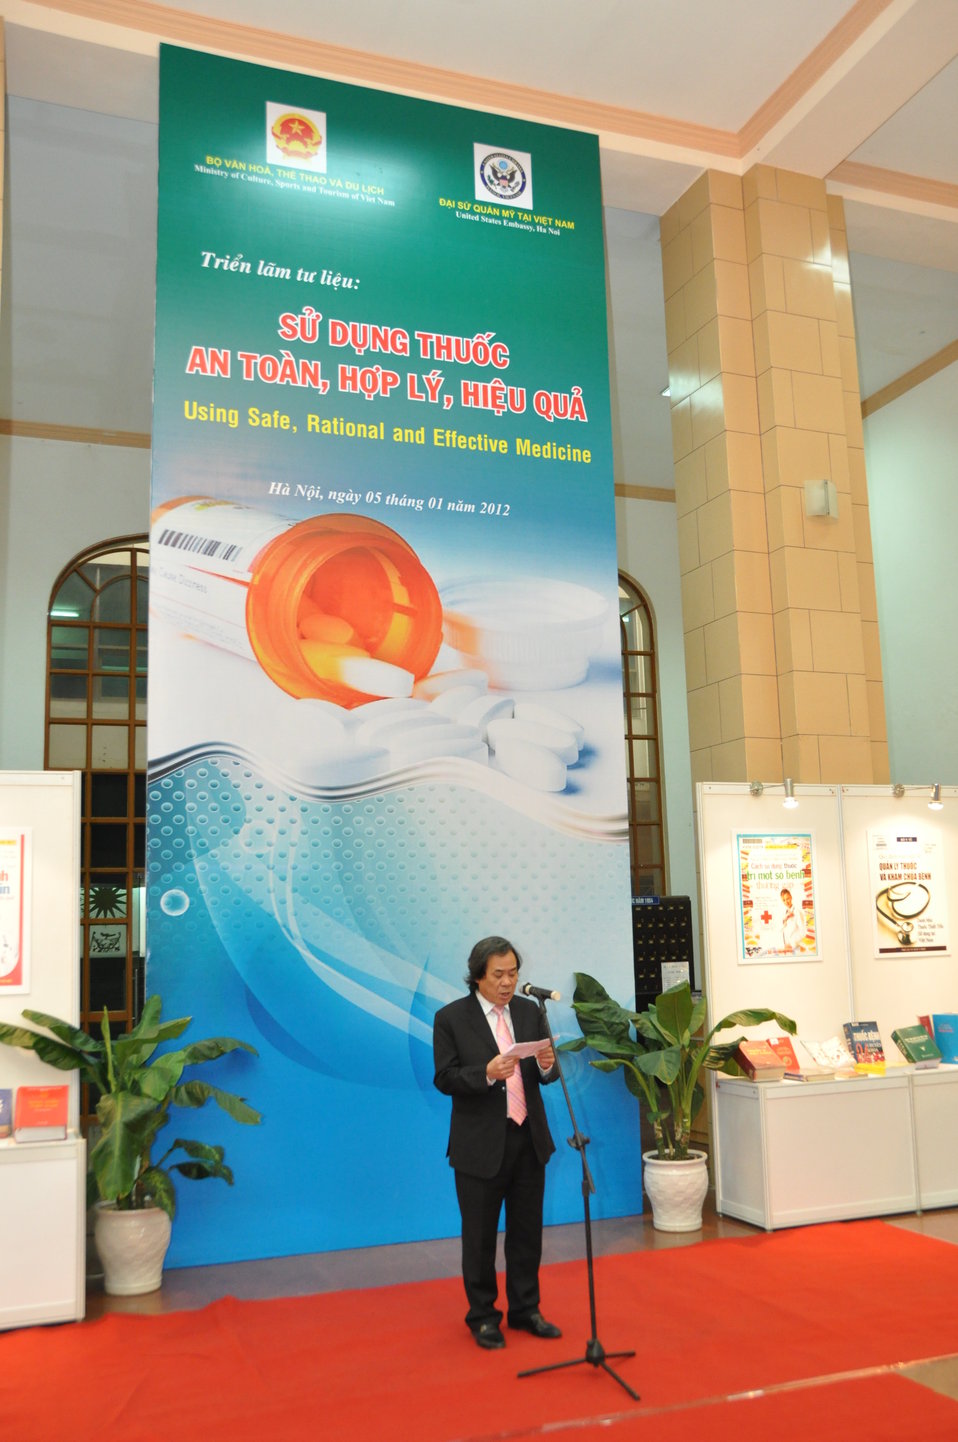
Ministry of Culture, Sports and Tourism Director General Nguyen Van Tinh

Safe Medicine Exhibition